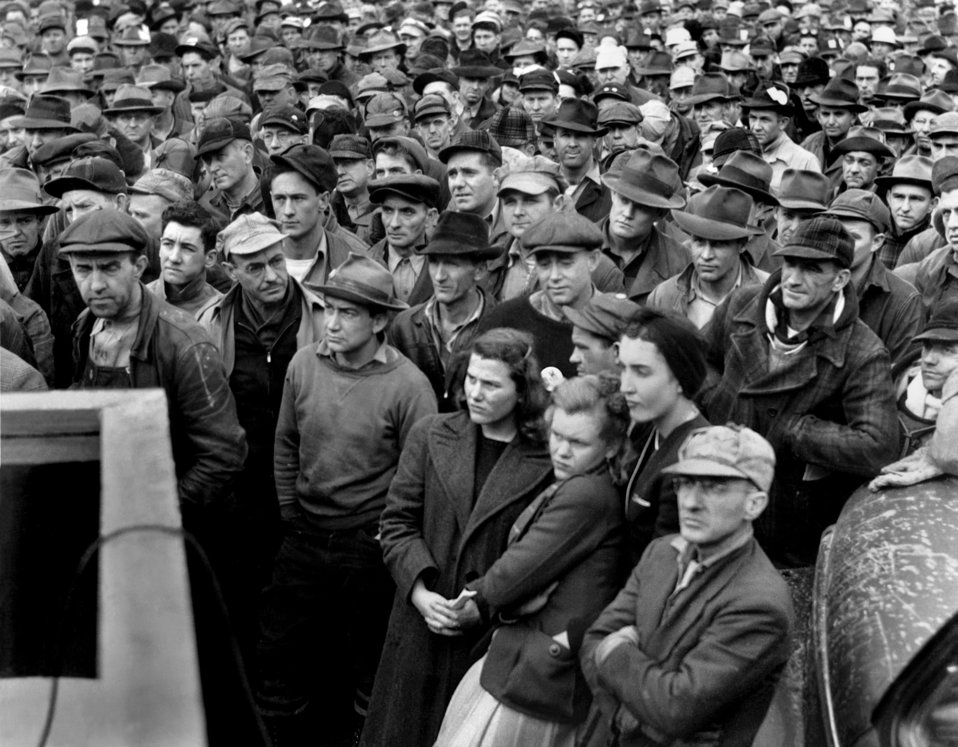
'Stay on the Job' rally at J.A. Jones Construction Co. Oak Ridge

pro 199-10 DOE photo by Ed Westcott

'Stay on the Job' rally at J.A. Jones Construction Co. Oak Ridge Tennessee 12-13-1944